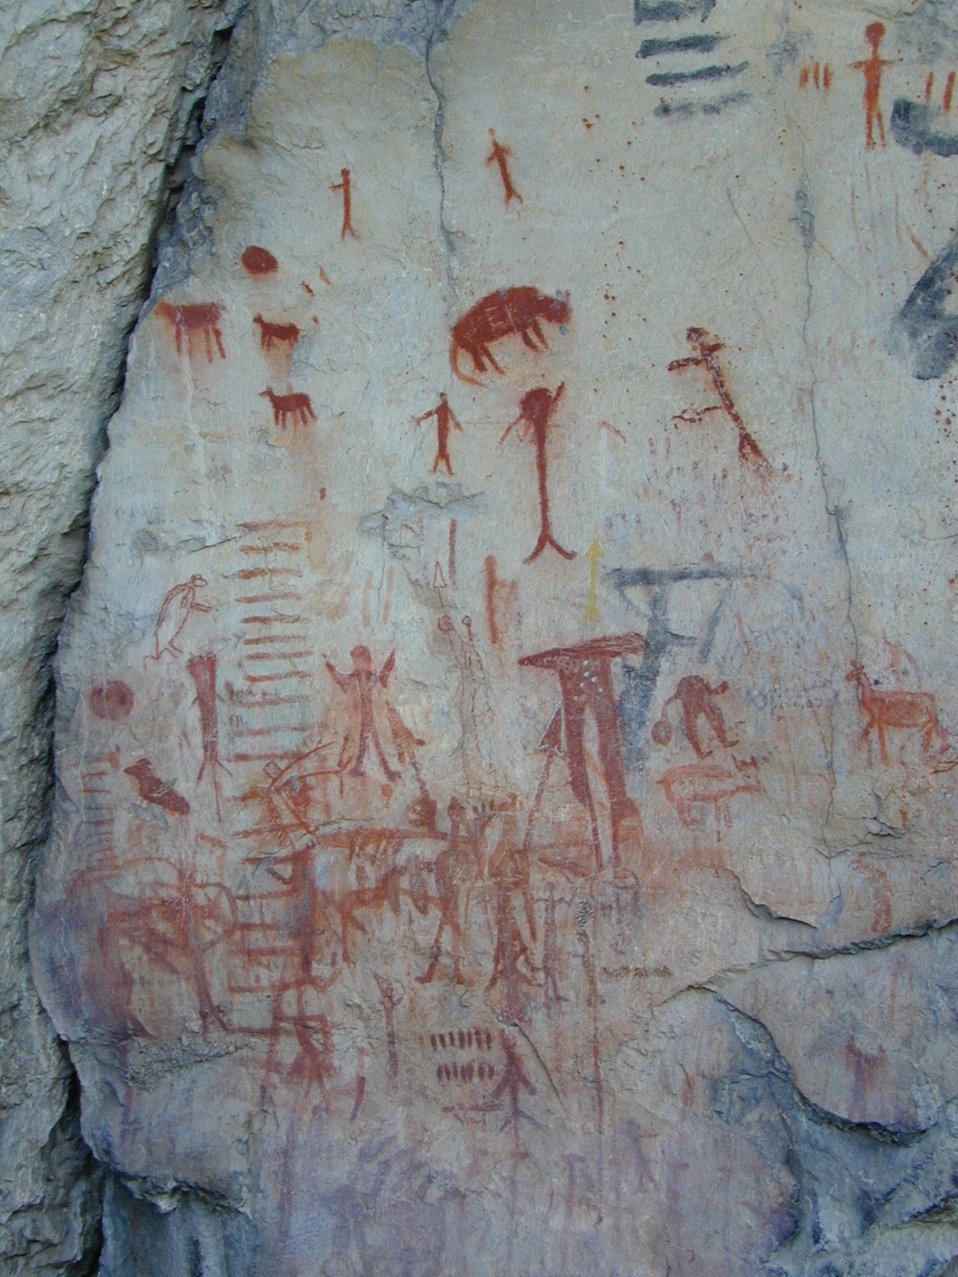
Birch Creek Valley Idaho Falls Field Office USRD Upper Snake River District